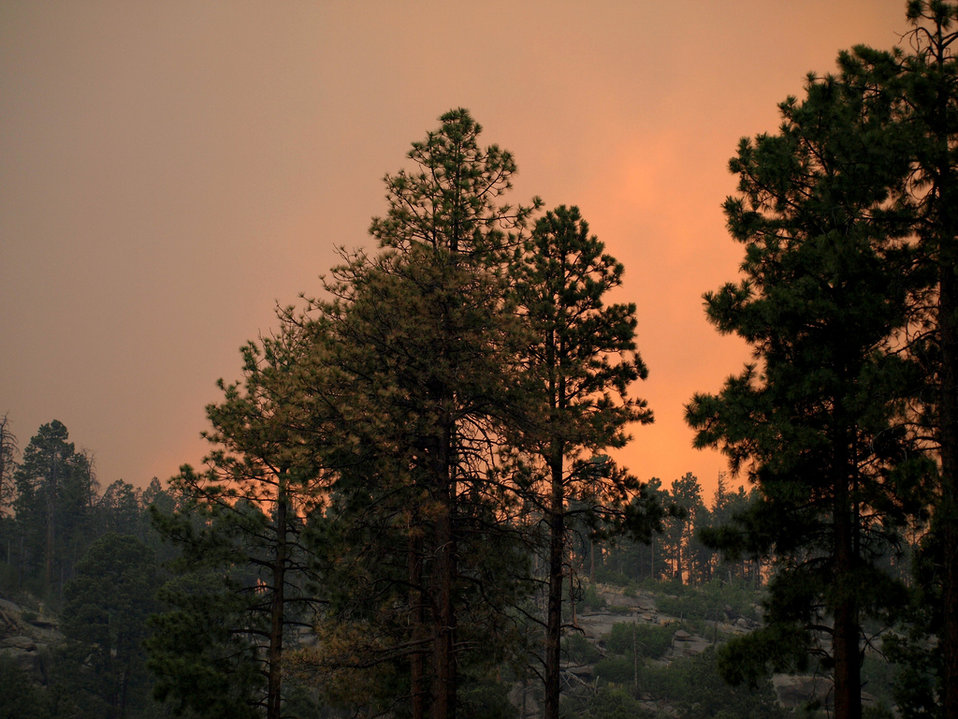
Looking up at the Jemez from near the Pajarito Ski Hill, June 27, 2011.

The Las Conchas Fire started on June 26, 2011, it was caused by a fallen tree that caught fire after it came in contact with power lines nearby. The fire had burned over 121,000 acres, including 63 residences. At no time were hazardous materials in danger at Los Alamos National Laboratory. The lab was closed for a week and reopened on July 6th.